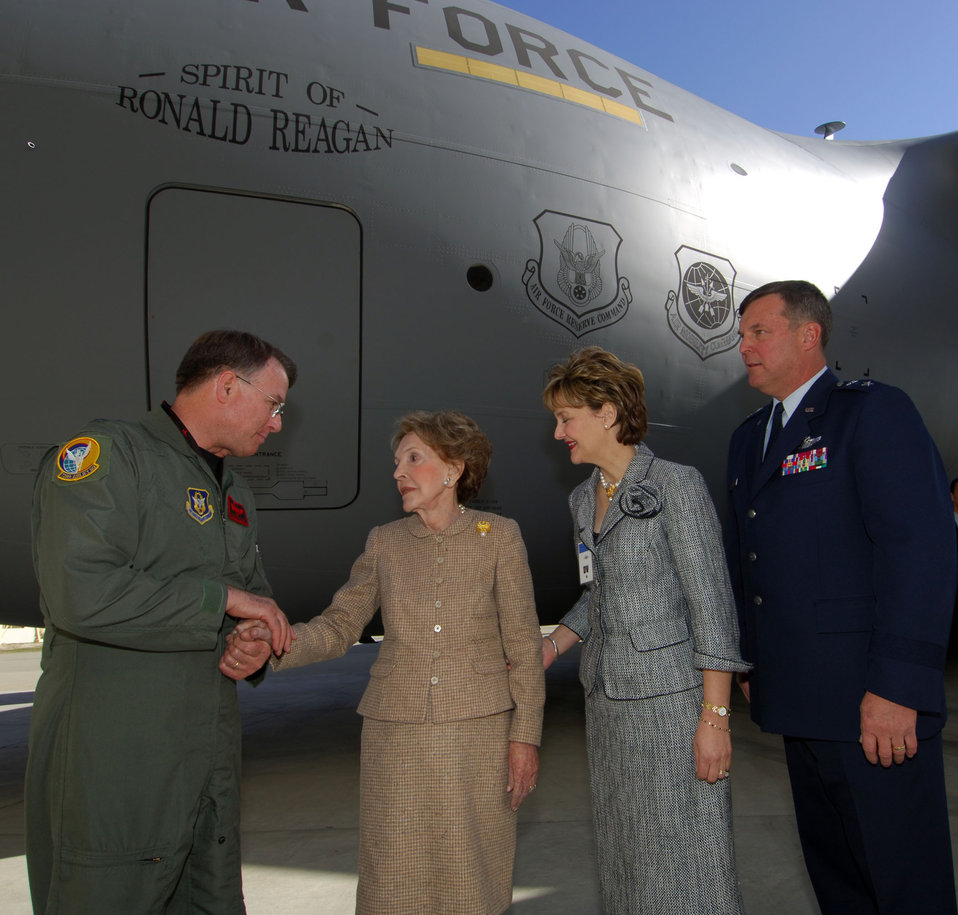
The Spirit of Ronald Reagan

MARCH AIR RESERVE BASE, Calif. (AFPN) -- Lt. Gen. John Bradley shakes Nancy Reagan's hand after landing the C-17 Globemaster III aircraft the Air Force dedicated today in honor of her late husband, President Ronald Reagan. The general's wife, Jan, and 4th Air Force commander Maj. Gen. Robert E. Duignan also attended the dedication of The Spirit of Ronald Reagan. General Bradley is chief of the Air Force Reserve and commander of Air Force Reserve Command.